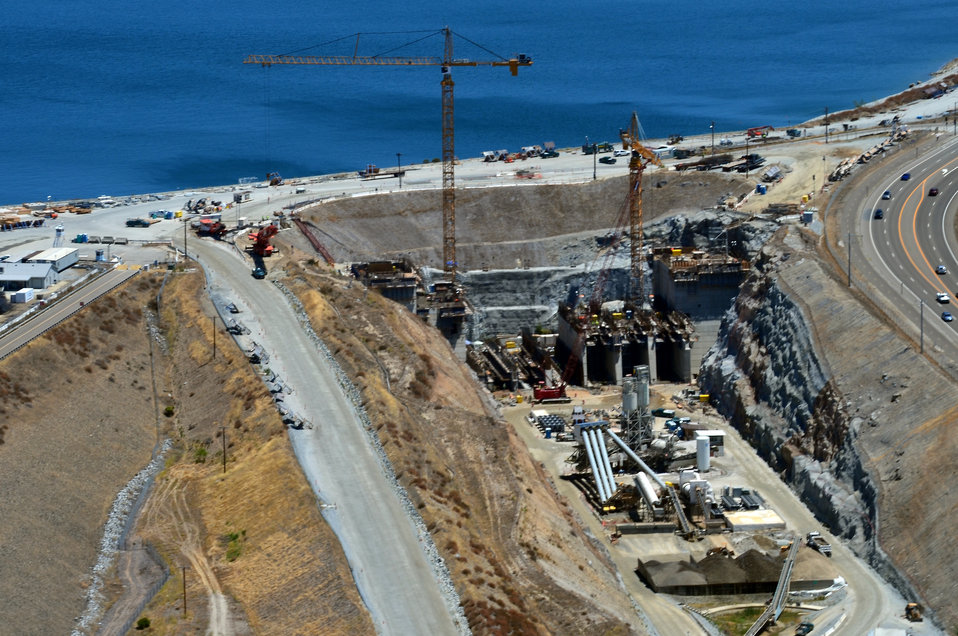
Aerial View of Folsom Dam Auxiliary Spillway

An aerial view shows the construction site of the Folsom Dam auxiliary spillway in Folsom, Calif., July 16, 2013. Excavation began in 2011 to remove 3.5 million cubic yards of rock and soil from the site. In 2012, the first steel and concrete were placed for the control structure—essentially a second dam—that will stand as tall as the Statue of Liberty when completed. The completed dam and chute will include 350,000 cubic yards of concrete, enough to line up concrete trucks from Sacramento to Los Angeles; and 24 million tons of steel, enough to build two Eiffel Towers. The project is scheduled to be completed by October 2017 and is one piece of a larger plan to help the Sacramento region reduce the risk of flooding.